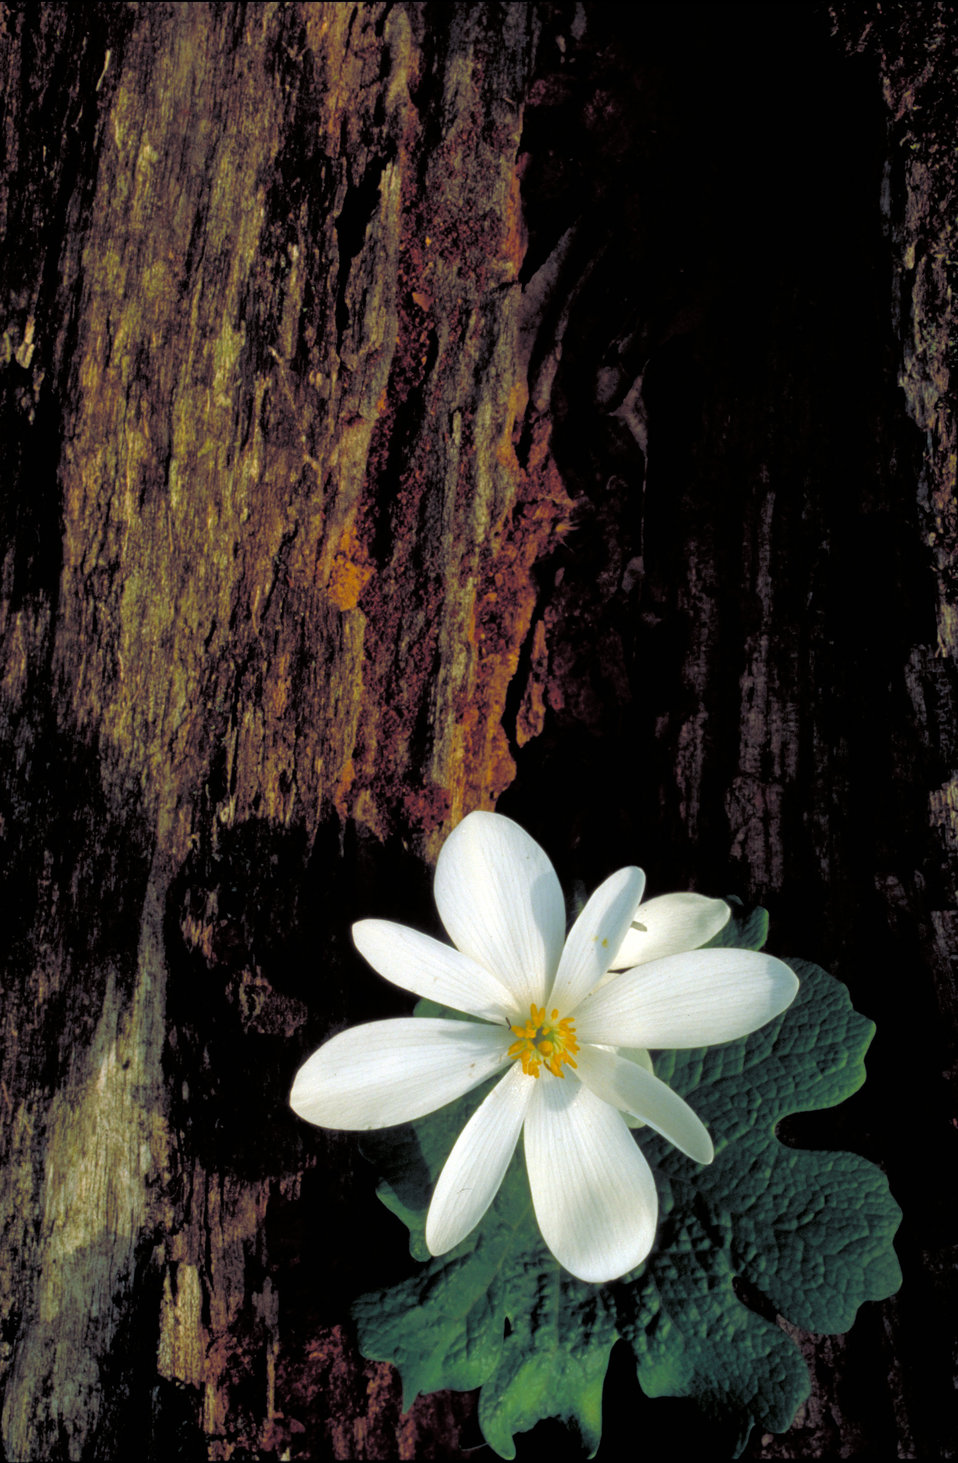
White bloodroot flowers

Shot of white woodland flowers with yellow centers.